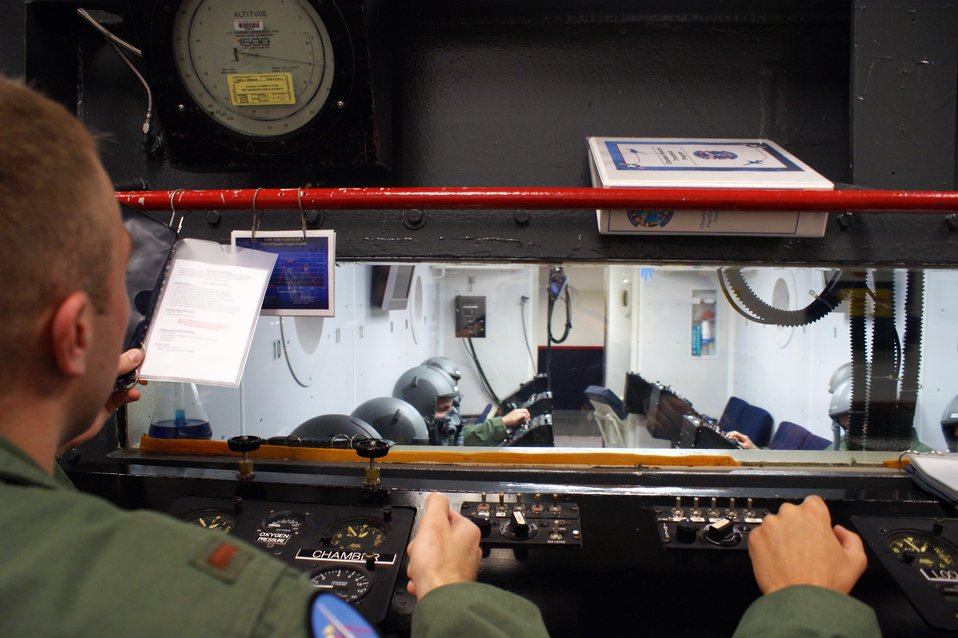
Hypoxia refresher training

Euro-NATO Joint Jet Pilot Training students undergo an altitude chamber flight at Sheppard Air Force Base, Texas, on June 8, 2012 . Undergraduate pilot training students receive 50 hours of physiological training during the first year of training, and all pilots and aircrew members are required to take refresher training every five years, to include exposure to hypoxia symptoms.